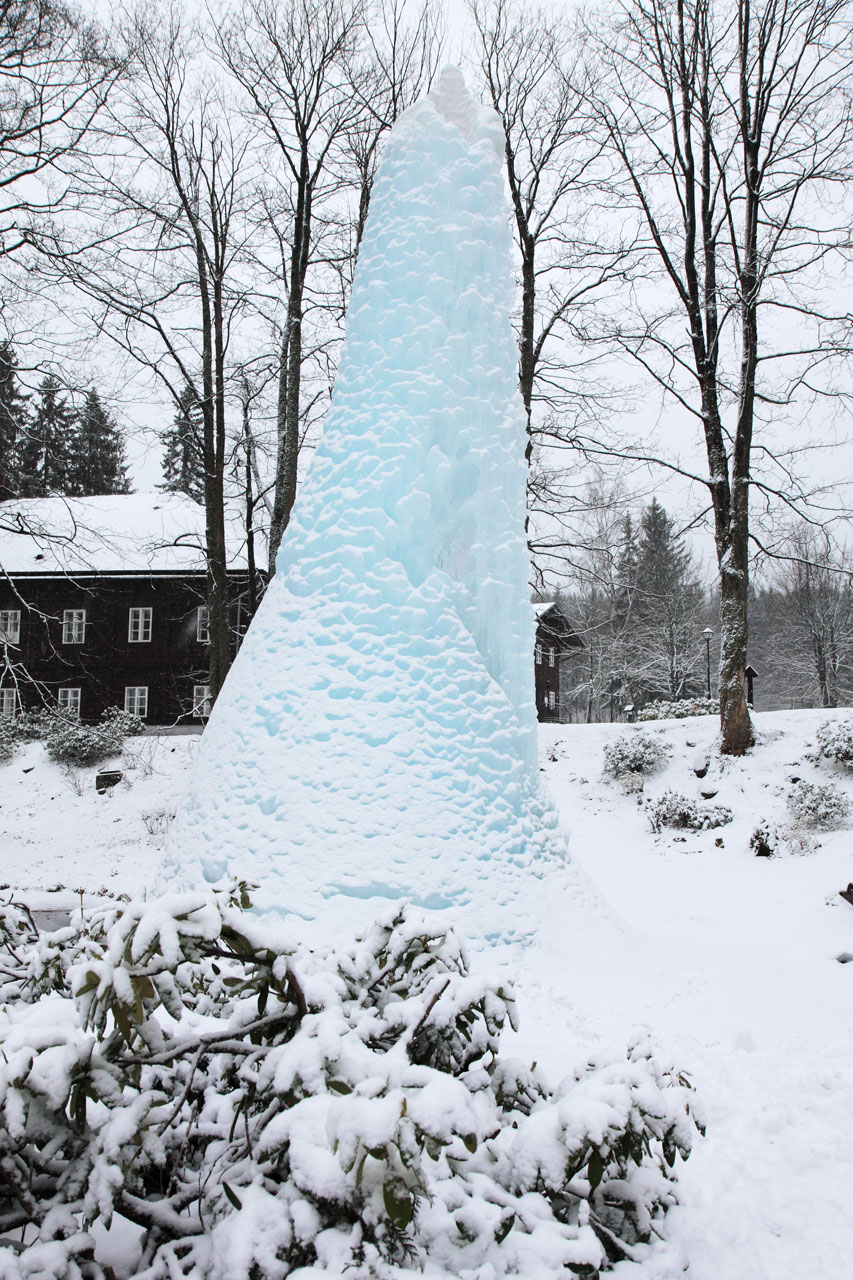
Frozen fountain in karlova studanka - czech republic.